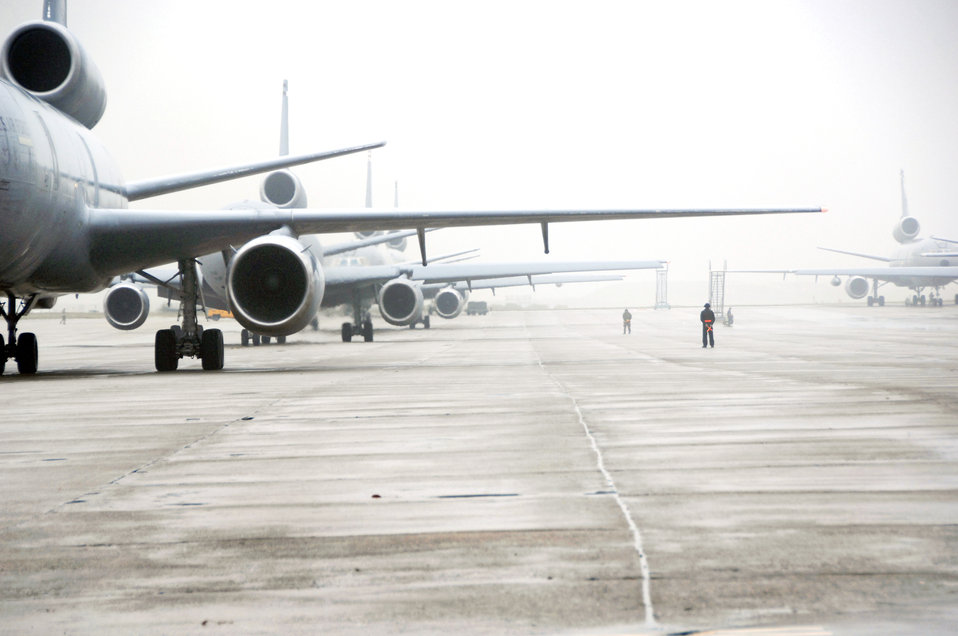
Travis officials conduct mass launch

Aircraft prepare to take off Dec. 21 during the first-ever mass launch of nine aircraft at Travis Air Force Base, Calif. The total force launch effort was an opportunity for operations, maintenance and support personnel to train together on a larger scale than normal.